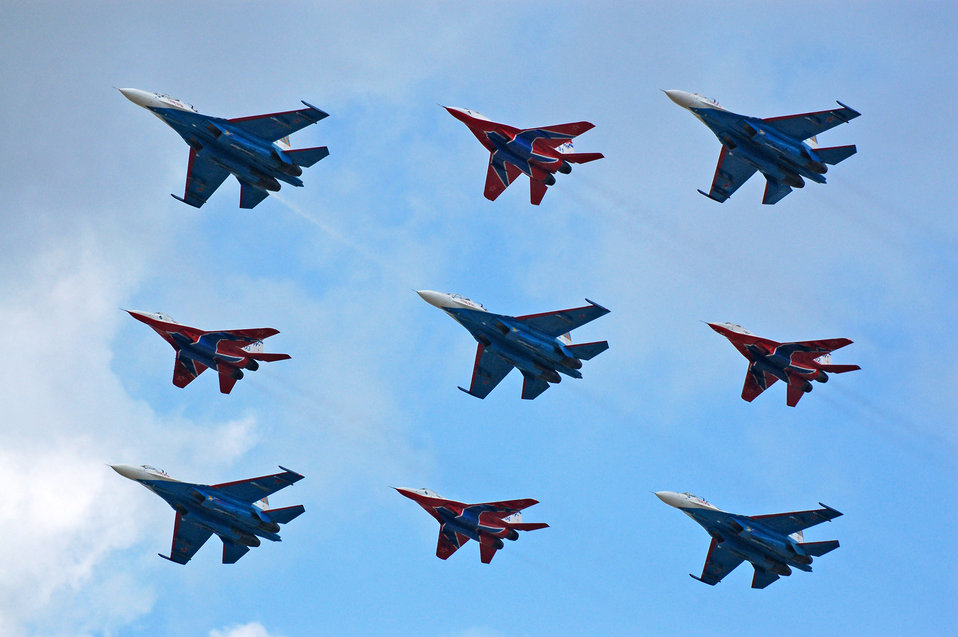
'The Big Nine' - flight groups 'Russian Knights' and 'Strizhi' (the international aerospace salon MAKS-2007) Русский: «Большая девятка» — пилотажные группы «Русские витязи» и «Стрижи» (международный авиакосмический салон МАКС-2007)